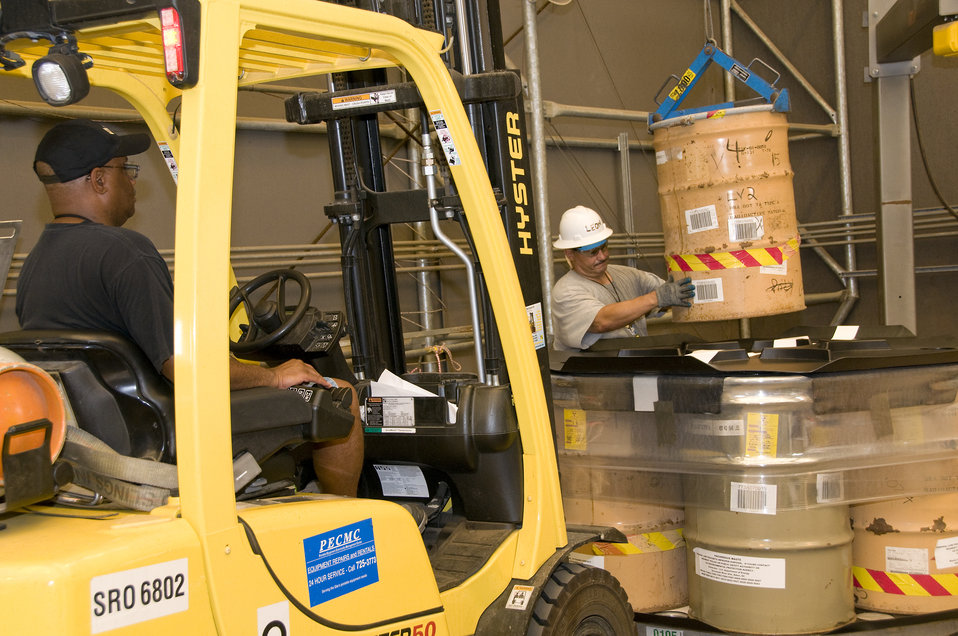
Prepping drums for shipment